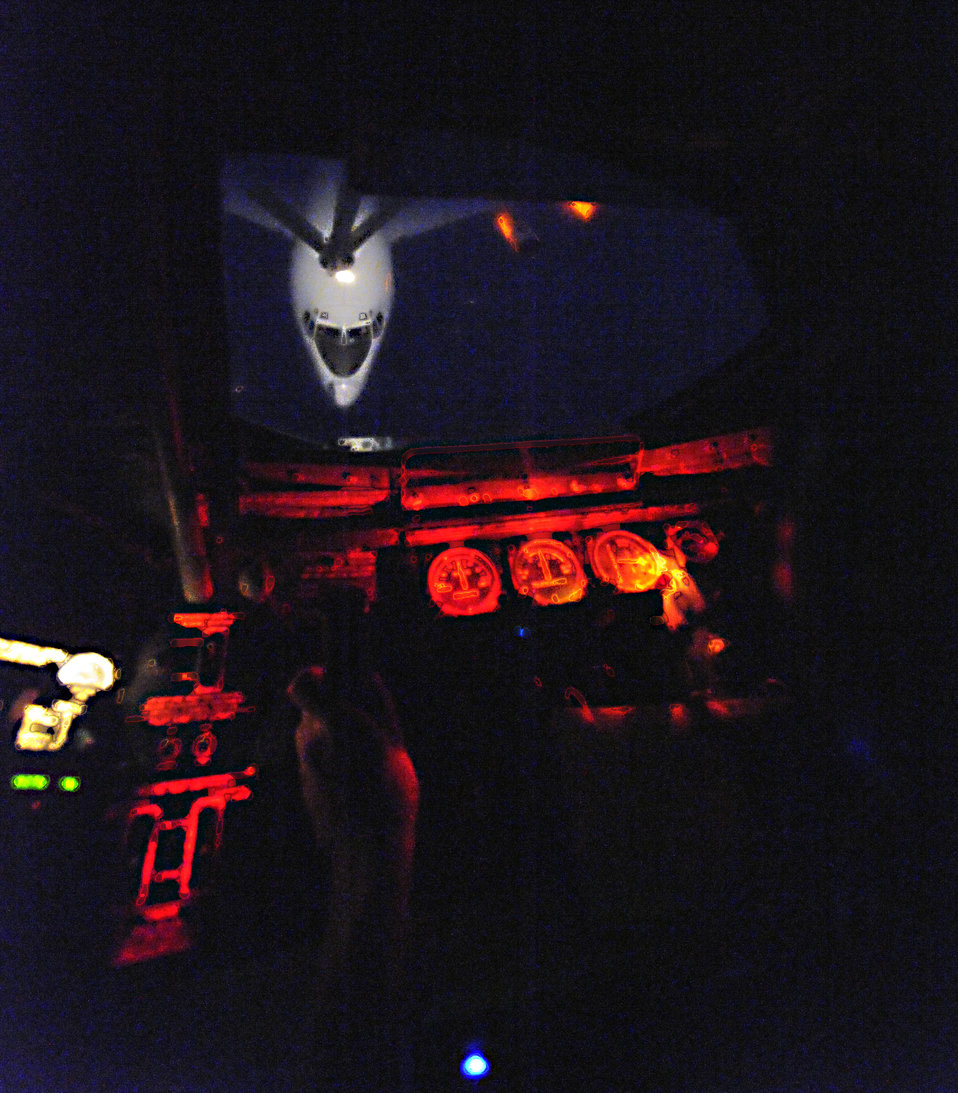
Refuelers keep mission soaring

Airman 1st Class Tyler Williams, a boom operator assigned to the 340th Expeditionary Air Refueling Squadron at an air base in Southwest Asia, refuels an E-8C Joint STARS over Iraq in support of Operation Iraqi Freedom.